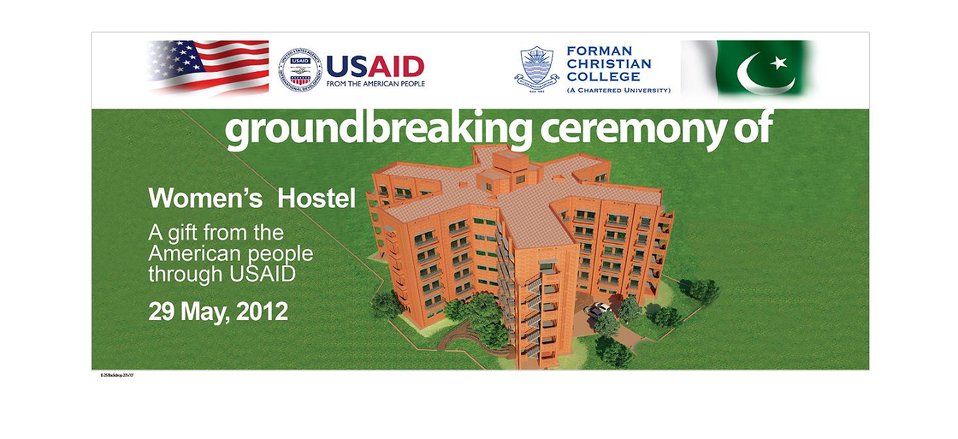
Groundbreaking ceremony for the USAID-funded women's hostel at Forman Christian College

Lahore May 29, 2012: U.S. Agency for International Development (USAID) Mission Director
Dr. Andrew Sisson and U.S. Consul General Nina Fite led the groundbreaking ceremony at the
new USAID-funded Women’s Hostel at Forman Christian College (FCC).